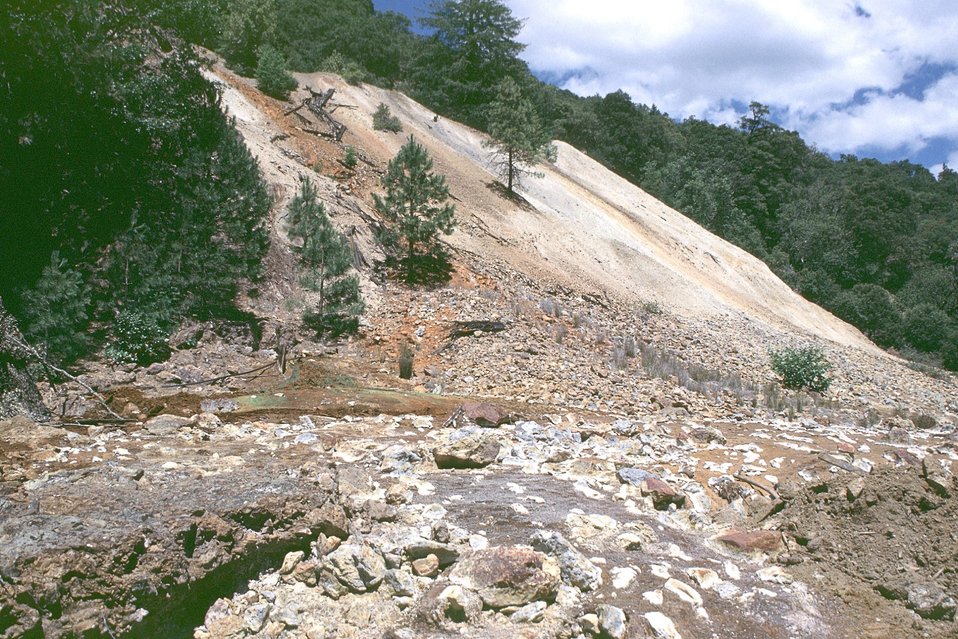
Almeda Mine, Medford District.